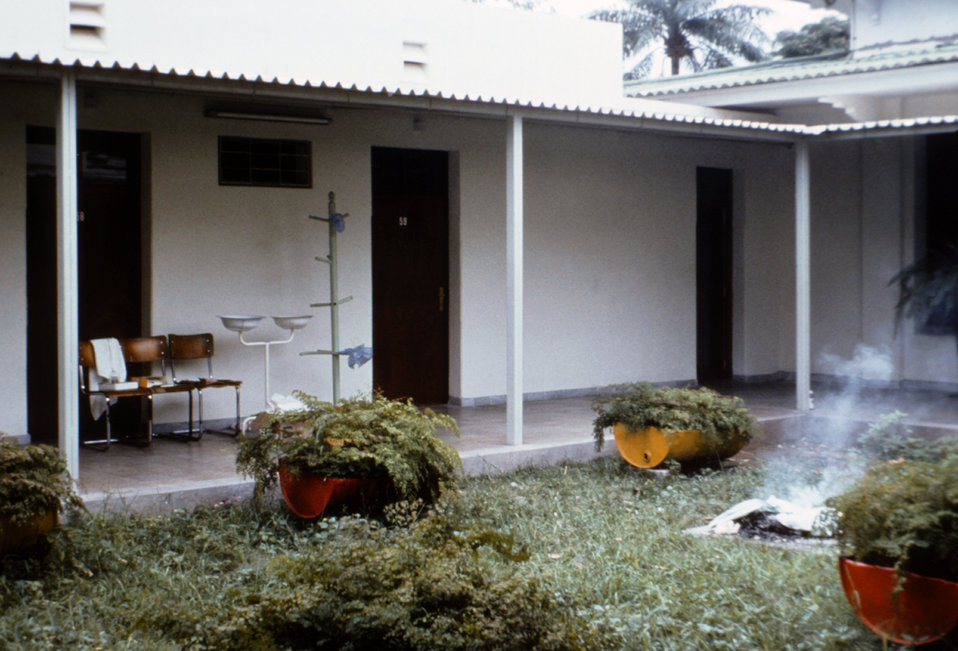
Photographed from within the courtyard of Ngaliema Hospital in Kinshasa, Zaire, this image showed the outside of the Ebola patients' rooms during the country's 1976 outbreak.